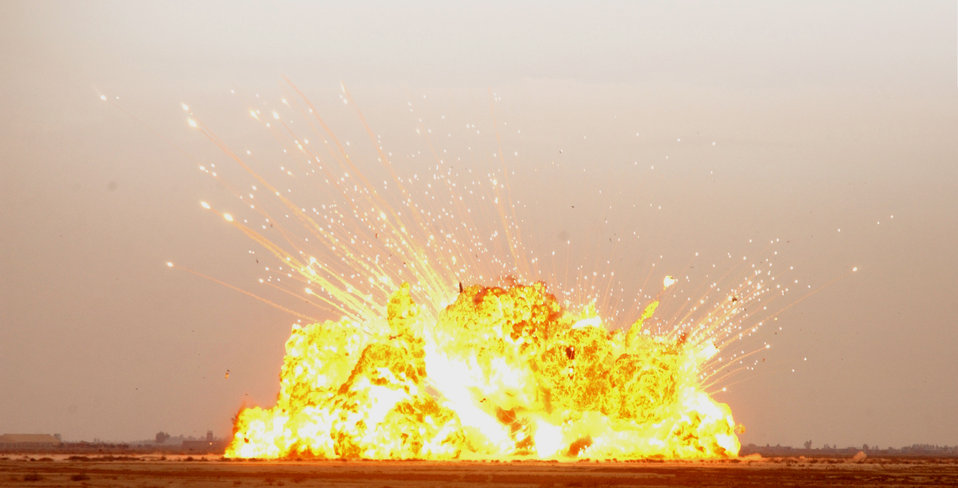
EOD Airmen play key role in Balad mission

BALAD AIR BASE, Iraq -- A controlled detonation blast here lights up the sky. Materials detonated include weapons, contaminated fuel and outdated flares.